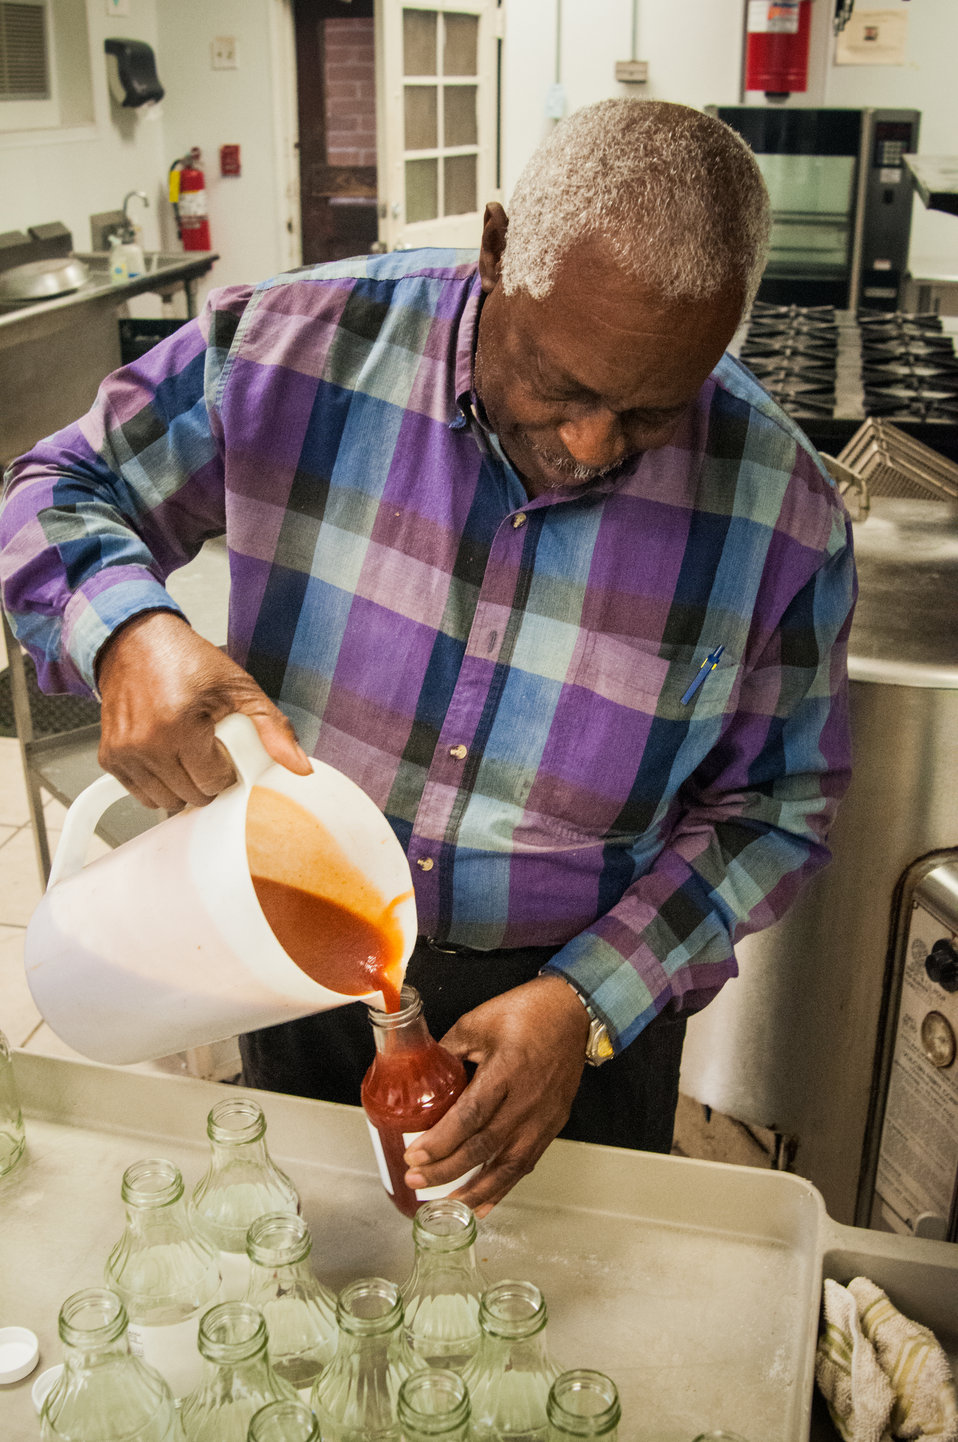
Clarence Cowart pours his homemade CC’s Home-style BBQ Sauce bottles in the incubator kitchen at the East Baker Historical Society Community Center in Newton, Baker County, GA on Mar. 7, 2013. The East Baker Historical Society Community Center secured a U.S. Department of Agriculture (USDA) Rural Development (RD) Community Facilities (CF) Loan for the kitchen that enabled residents to prepare catered meals and to prepare and package food products. The USDA Strike Force Initiative has designated Baker County, GA as a Strike Force county selected to receive assistance to relieve persistent poverty in historically high-poverty counties.